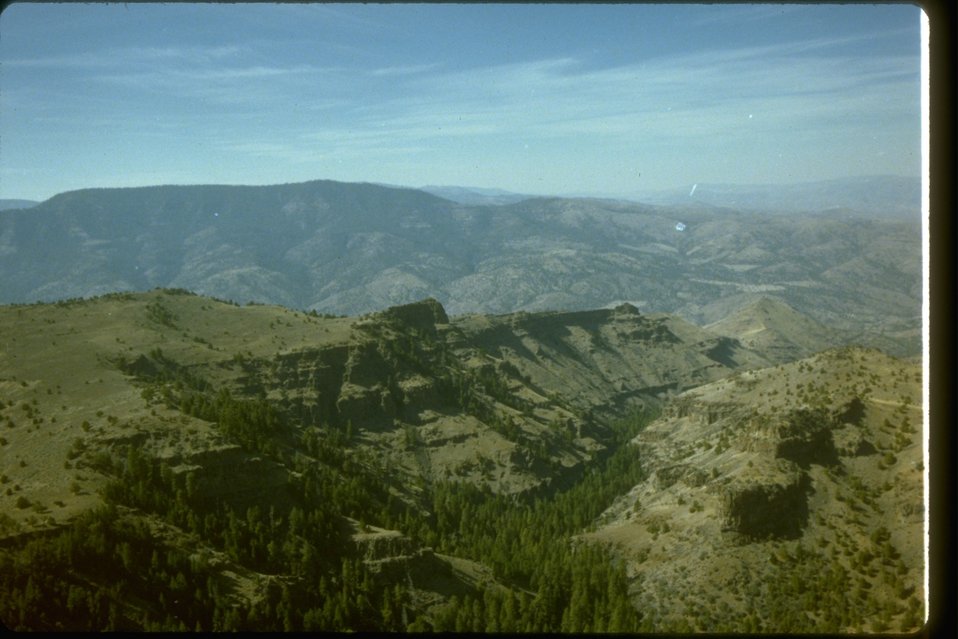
Aerial view of the Aldrich Mountains. OR 2-103